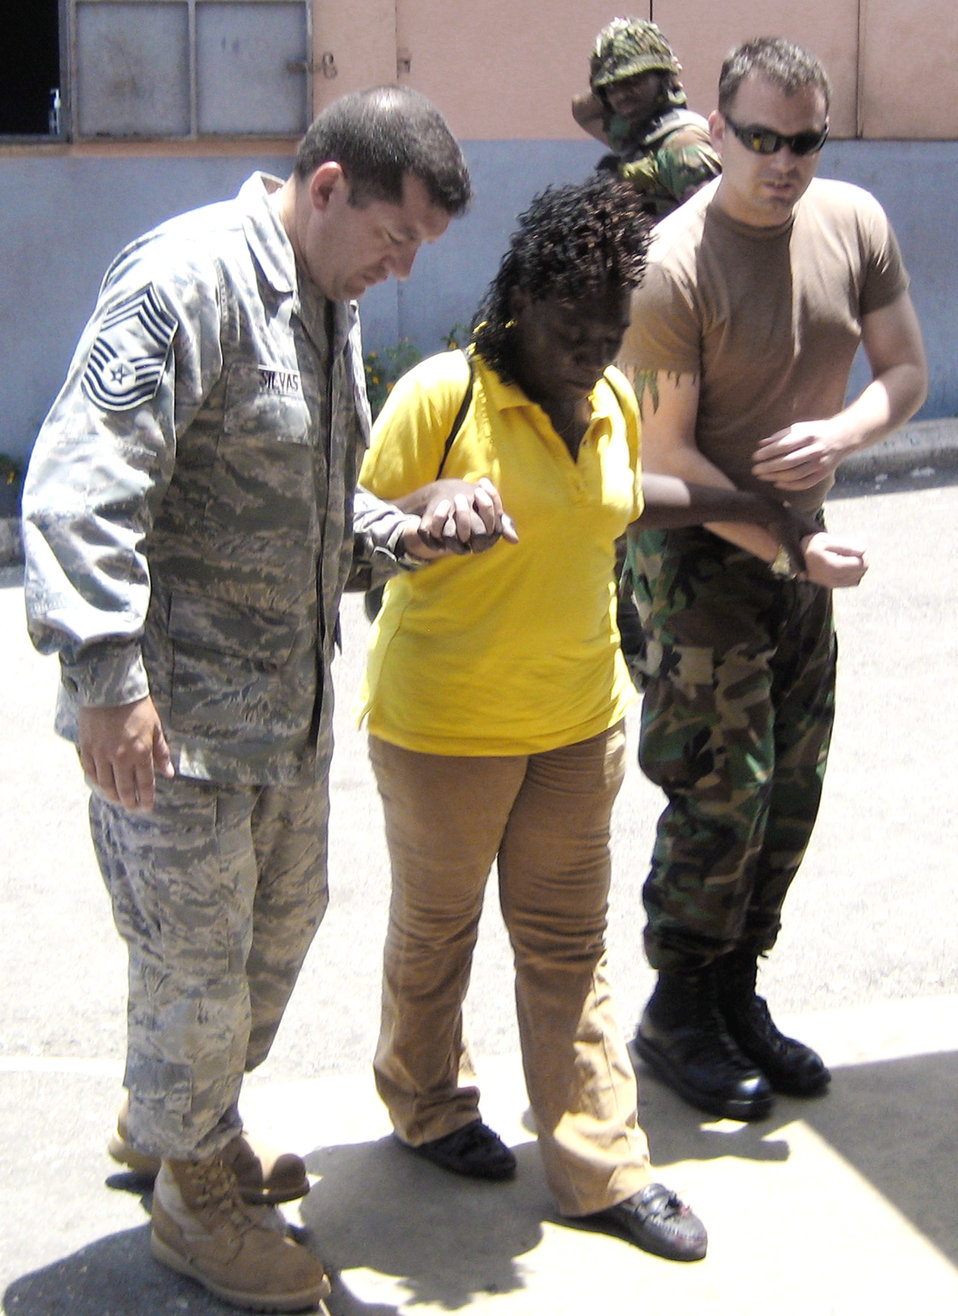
Airmen go 'Beyond the Horizon' to help Jamaicans

Chief Master Sgt. George Silvas and Tech. Sgt. Travis Davis escort a Jamaican woman to see the doctor April 16 in Jamaica. The woman reported having problems walking due to medical complications. Chief Silvas and Sergeant Davis are 162nd Fighter Wing medics.